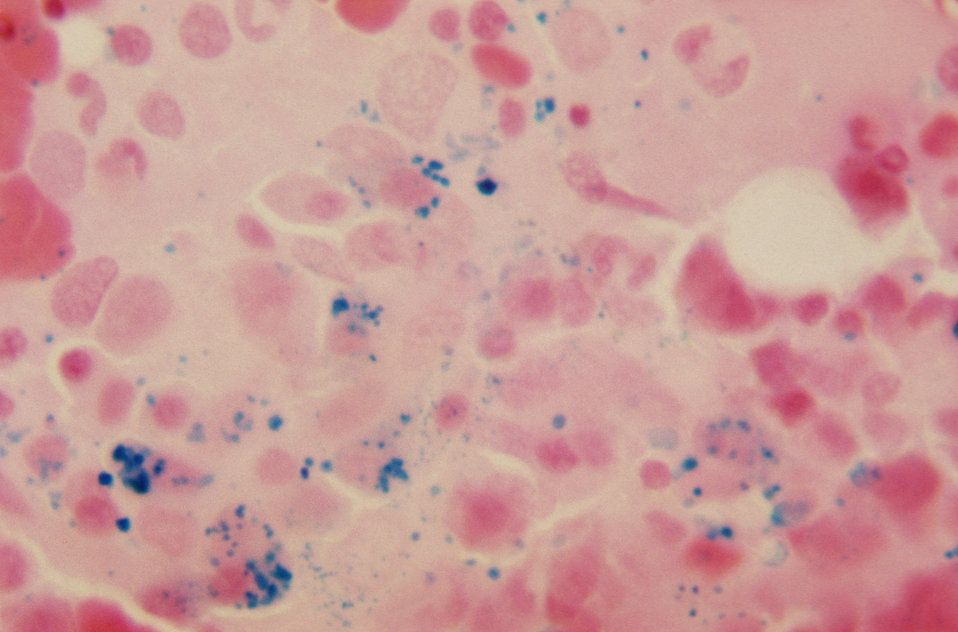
A photomicrograph detecting the presence of hemosiderin, stained blue, within diffuse bone marrow.